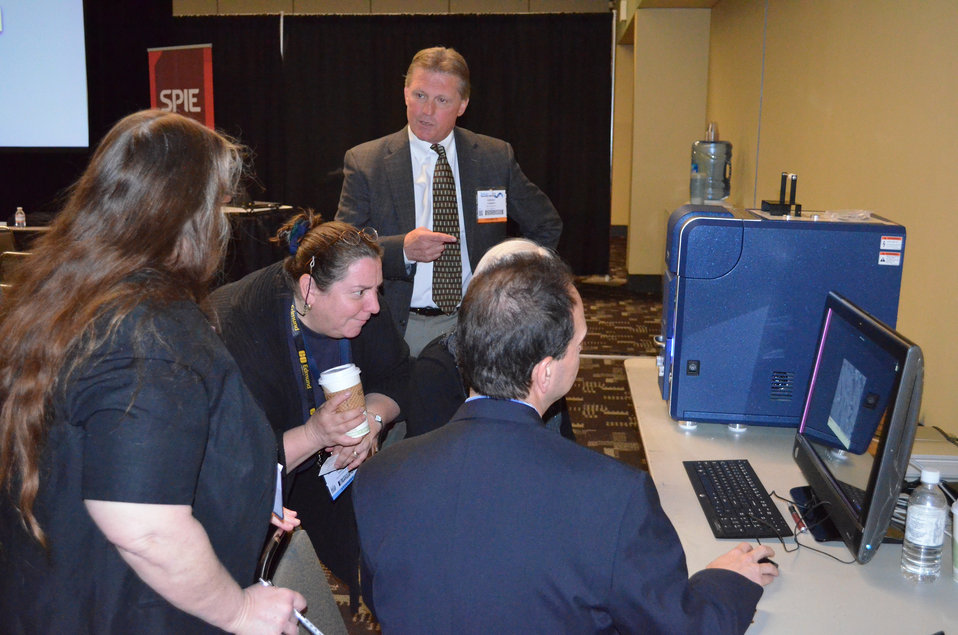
Teachers being shown how to examine common objects with a table-top scanning electron microscope as part of NIST’s STEM (science, technology, engineering and math) education outreach at the recent Scanning Microscopies 2012 conference in Baltimore, Md. Based on an idea by Robert Gordon of Hitachi High Technologies America, Inc. (HHTA) (standing man pointing to computer), this hands-on experience was included in the session, “Microscopy for STEM Educators,” organized by NIST researchers Michael Postek and Mary Satterfield to encourage educators to use microscopy in the classroom to foster student interest and excitement in STEM areas.